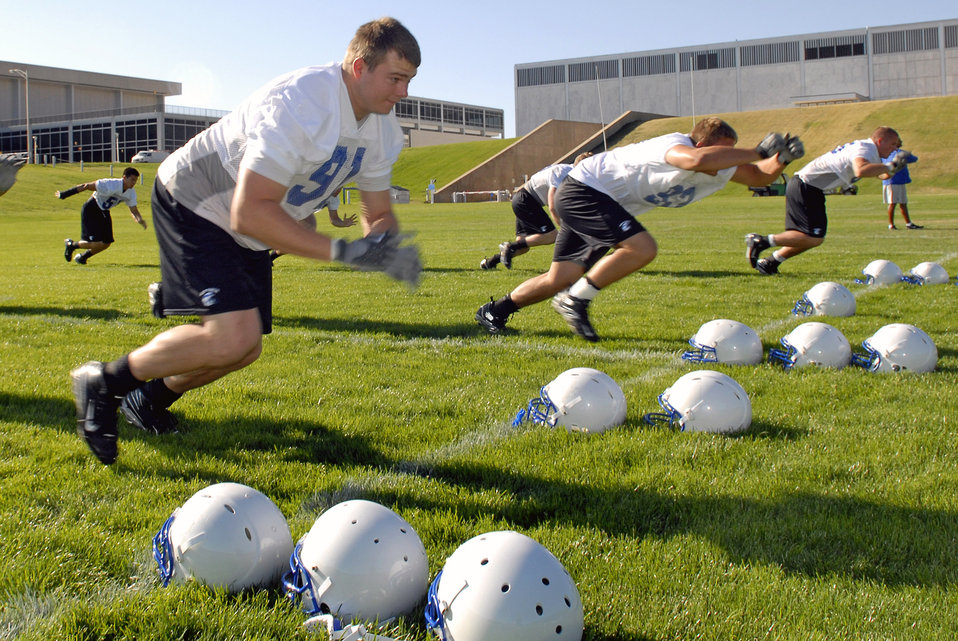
First day of football practice at the Academy

Defensive end Cadet 1st Class Ryan Kemp participates in drills as the Falcons practice in preseason camp July 31 at the U.S. Air Force Academy in Colorado.